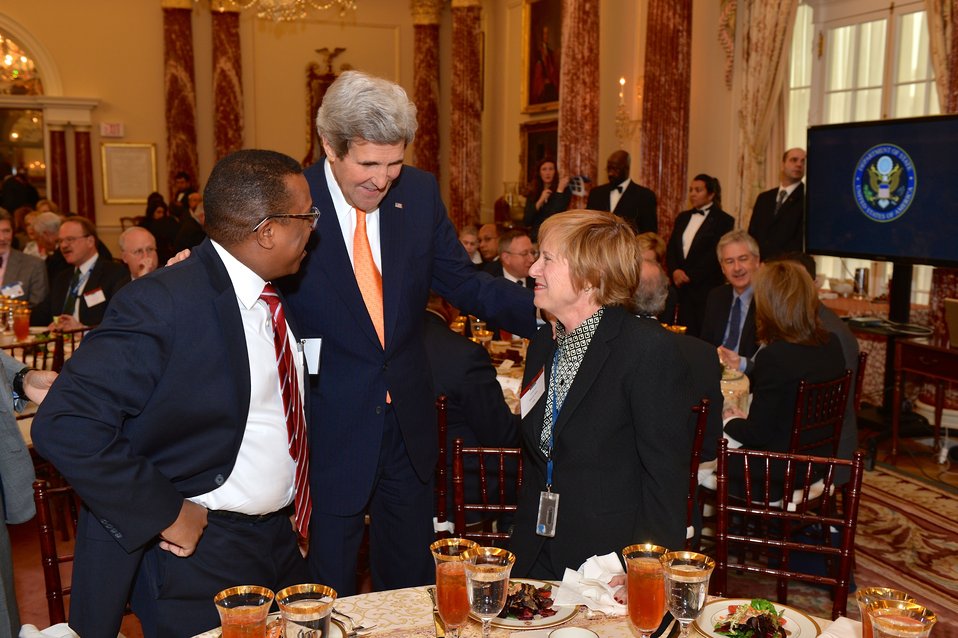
Secretary Kerry Chats With Ambassador-Designate Nichols and Ambassador Ries

U.S. Secretary of State John Kerry chats with U.S. Ambassador-Designate to Peru Brian Nichols and U.S. Ambassador to Bulgaria Marcie Ries at the Global Chiefs of Mission Conference luncheon at the U.S. Department of State in Washington, D.C., on March 10, 2014.